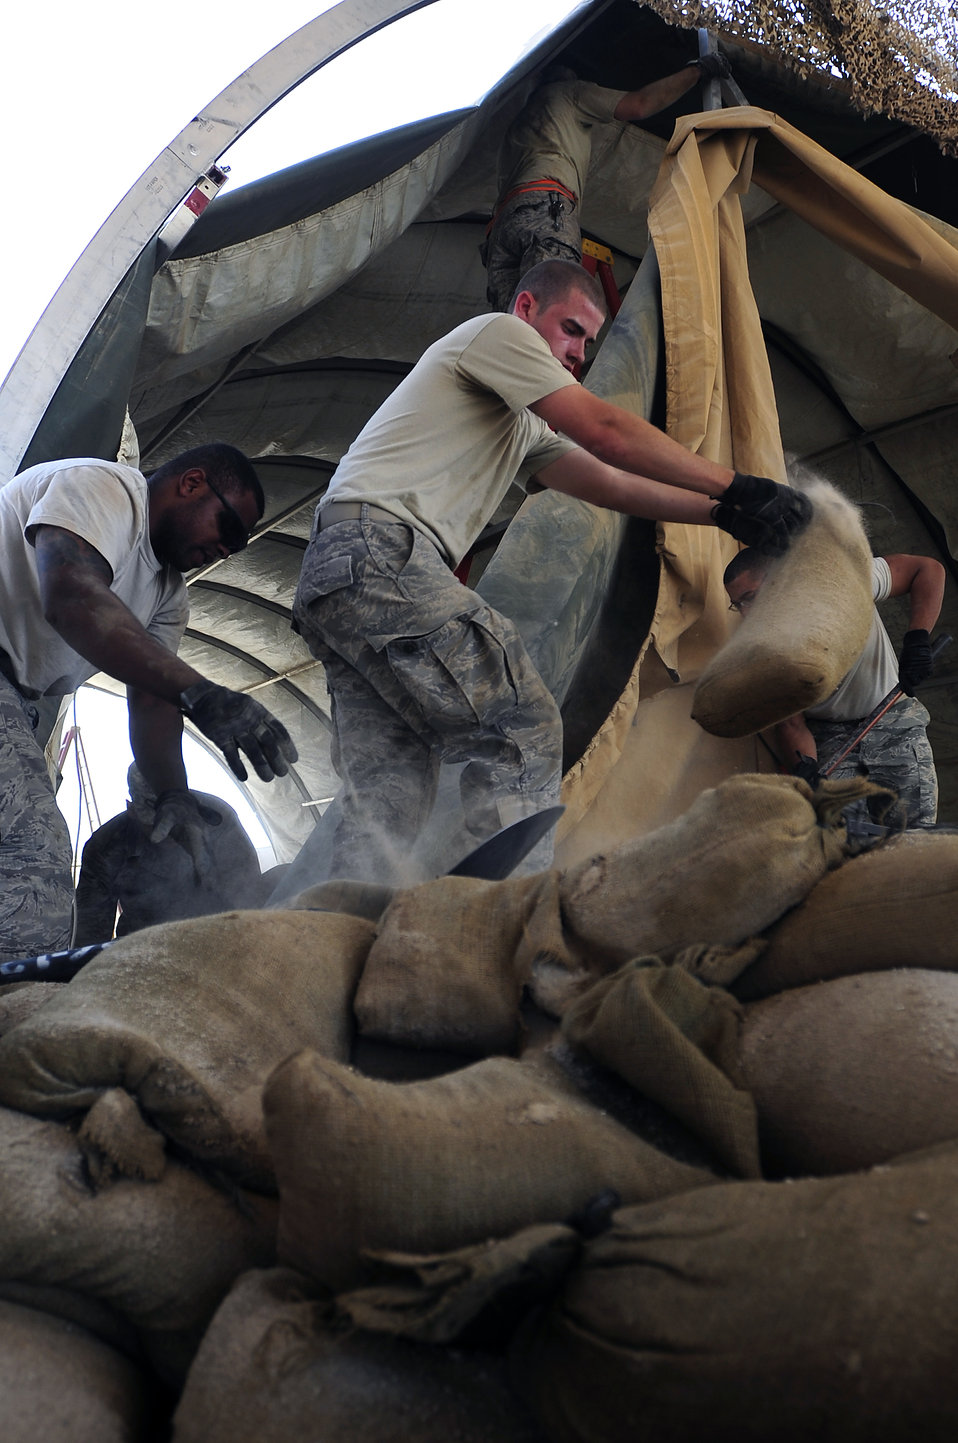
Reconstitution of materials supports fight, saves money

Members of the 407th Expeditionary Civil Engineer Squadron take down a tent structure Sept. 30, 2009, at Ali Base, Iraq. Squadron members are downsizing and consolidating material and equipment to send to U.S. warfighters in Afghanistan.